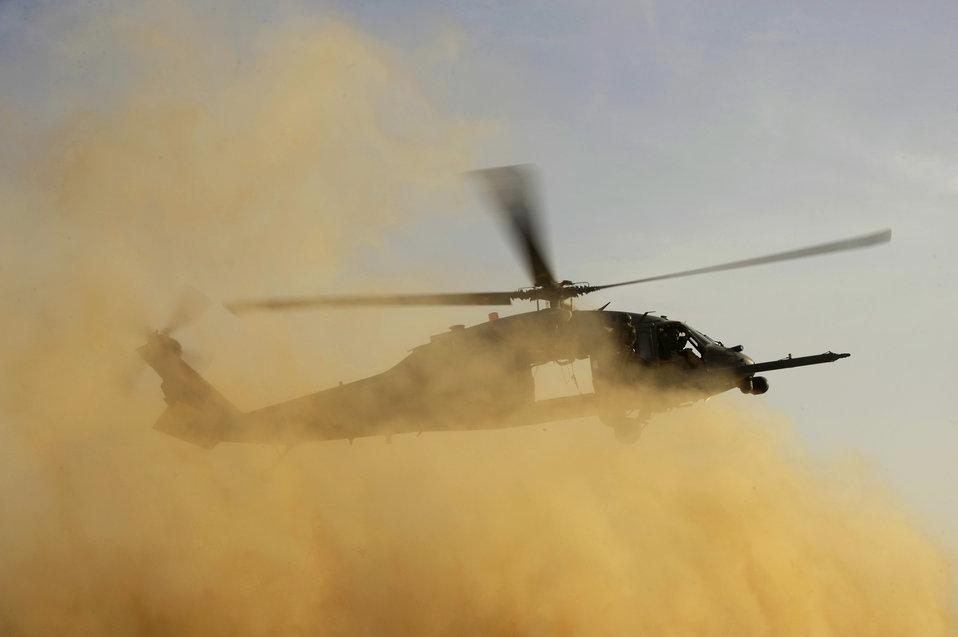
Kandahar Airmen practice evacuation skills

An HH-60 Pave Hawk from the 26th Expeditionary Rescue Squadron lands during a mass casualty exercise Dec. 24, 2010, near Kandahar, Afghanistan. The HH-60 is from the 26th Expeditionary Rescue Squadron.